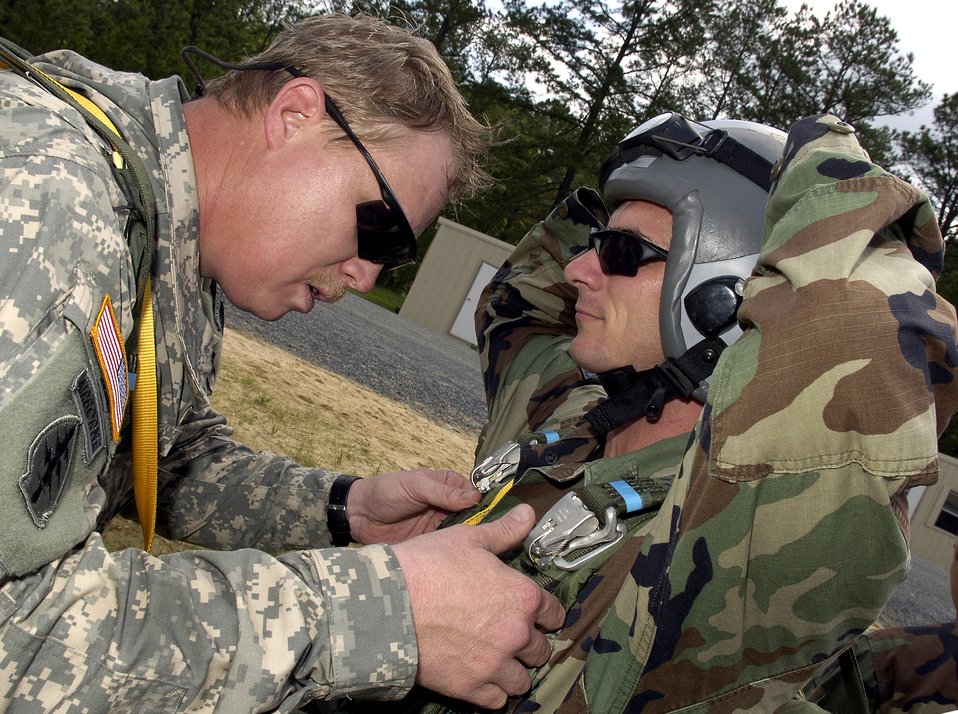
Special ops training

Army Master Sgt. Holland Wiler (left) performs a pre-jump inspection of Staff Sgt. Reed's parachute at the Joint Readiness Training Center at Fort Polk, La., on Wednesday, May 3, 2006. Sergeant Reed, a survival, evasion, resistance and escape specialist, jumped with special operations Soldiers to complete static-line parachute training.